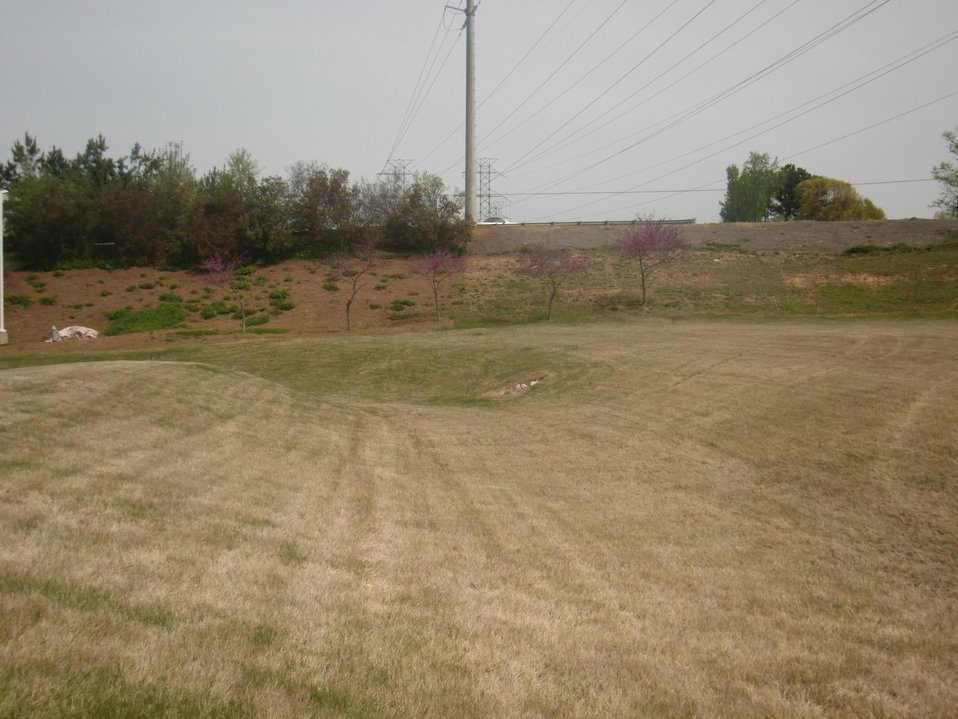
External shot of behind the building; Location: National Archives at Atlanta, Morrow, GA